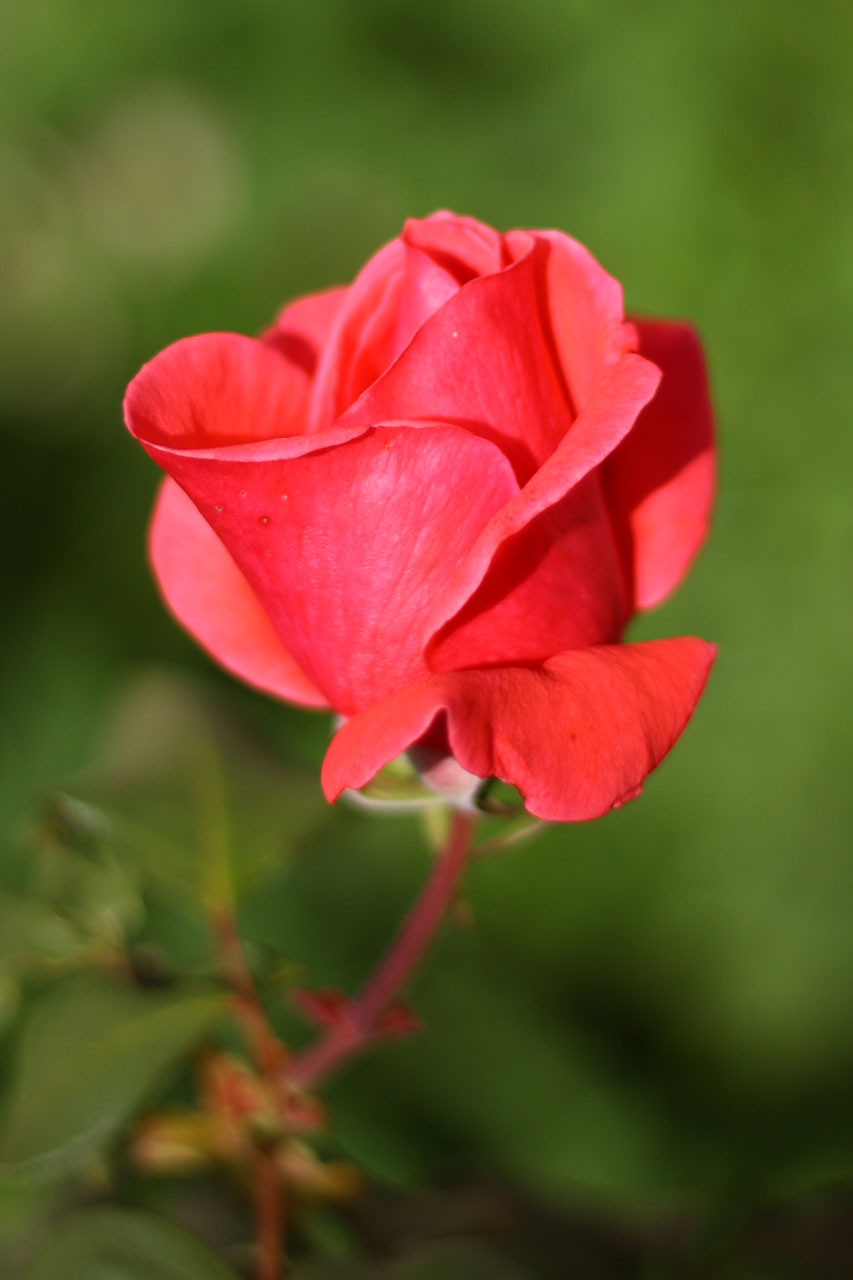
Pink rose bud

Rose bud just starting to open.